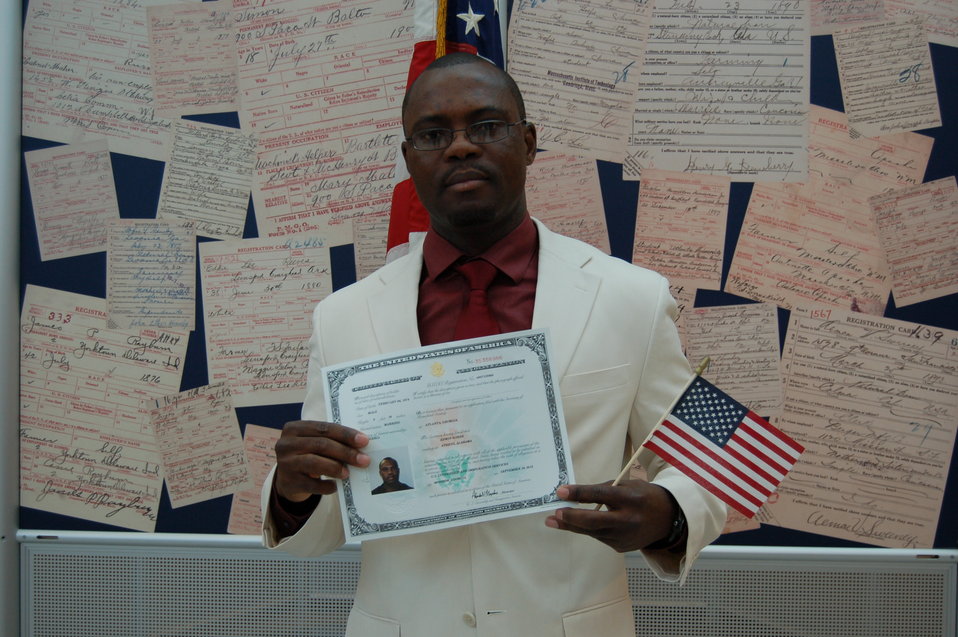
New Citizens